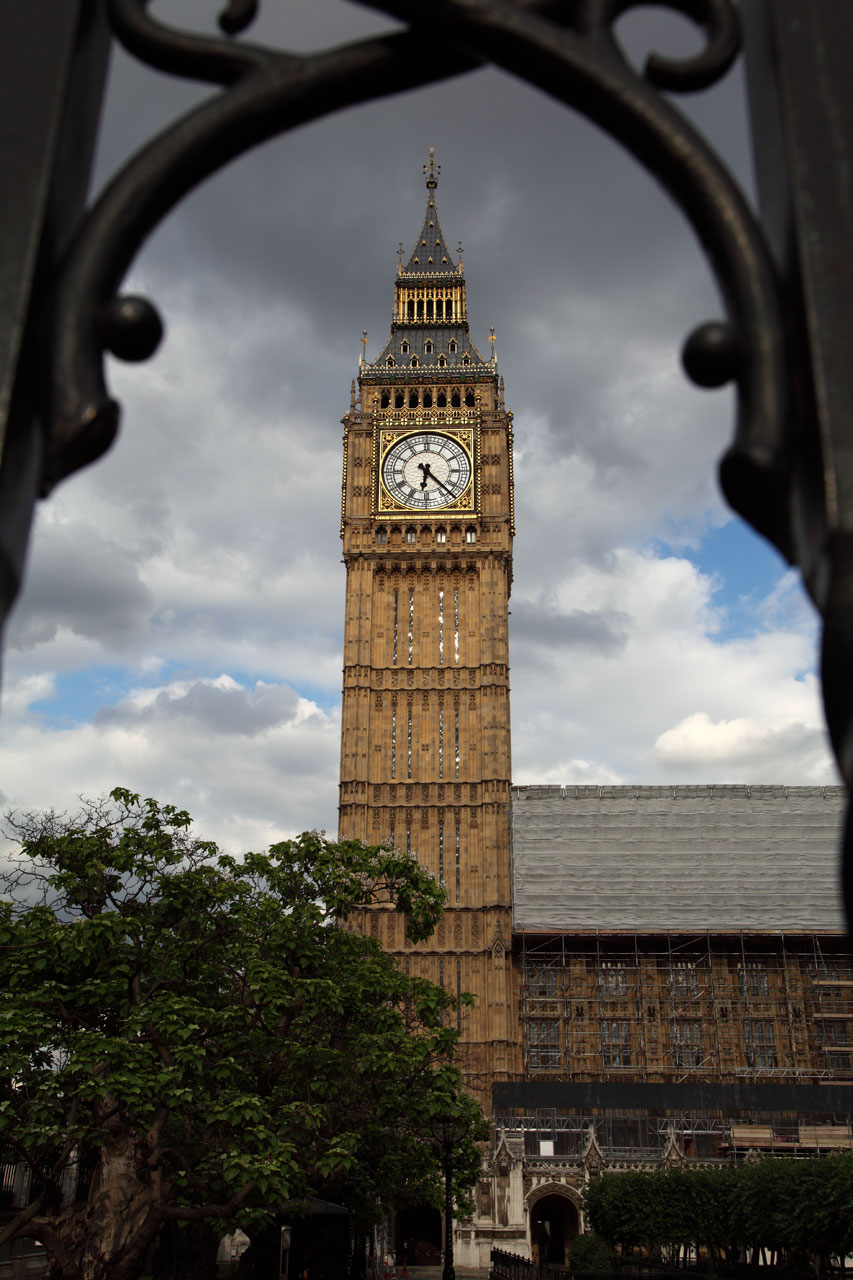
Big ben tower

Big ben in frame in london.